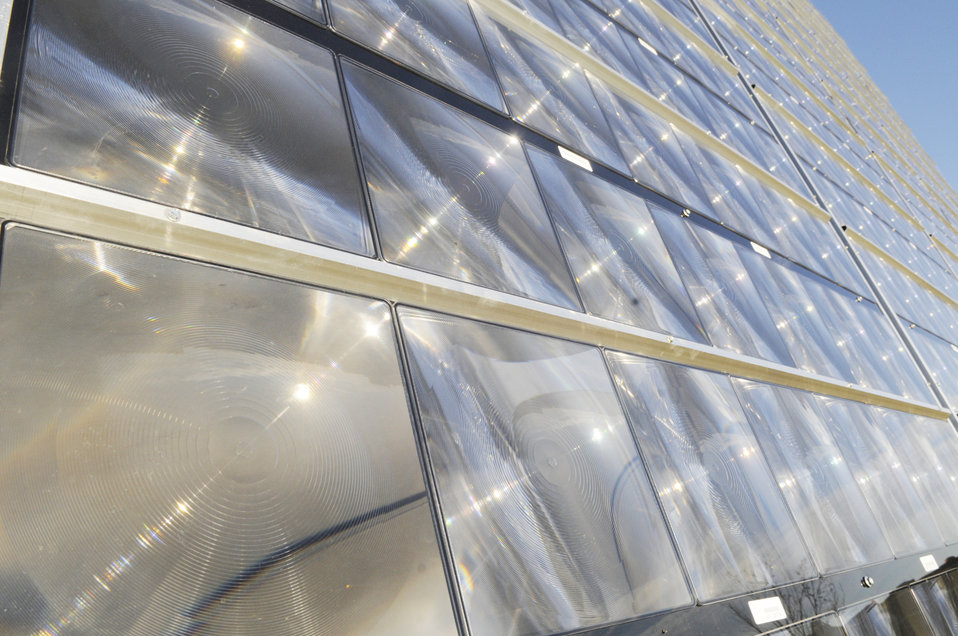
Robins home to southeast's first-of-its-kind solar technology

Each cell of the array has a lens that amplifies and focuses the solar energy onto a semiconductor solar cell. The solar panel is at Robins Air Force Base, Ga., for a one-year demonstration. The base can decide to keep it after that year.